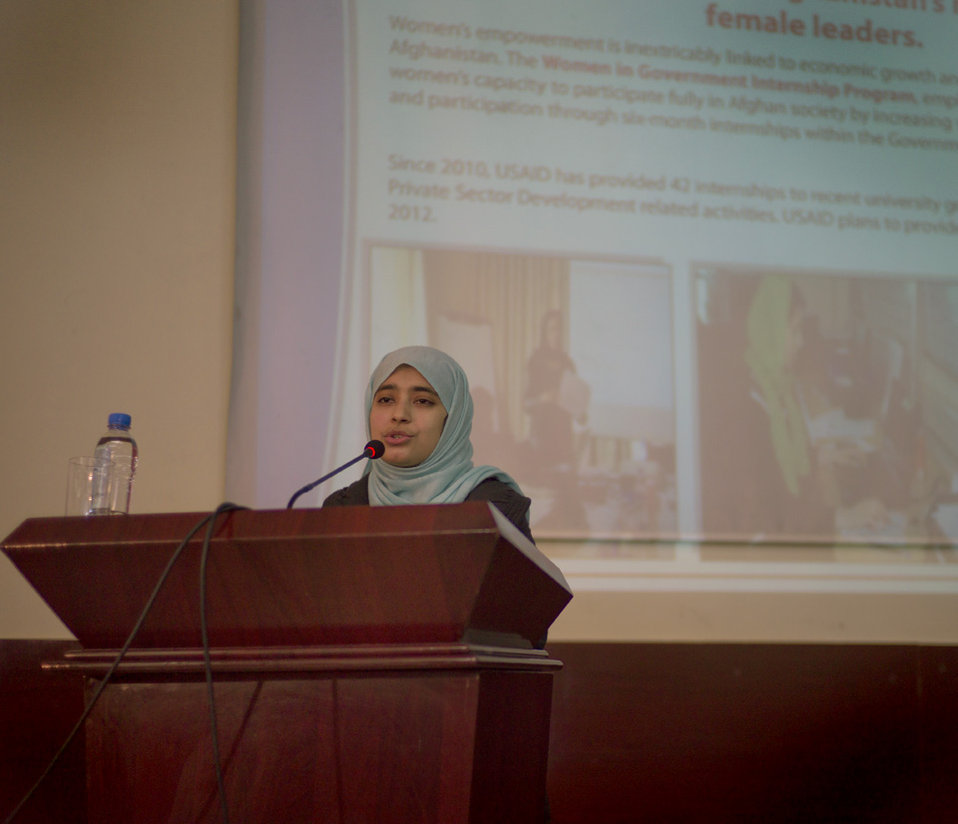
Image 4 3:18:12